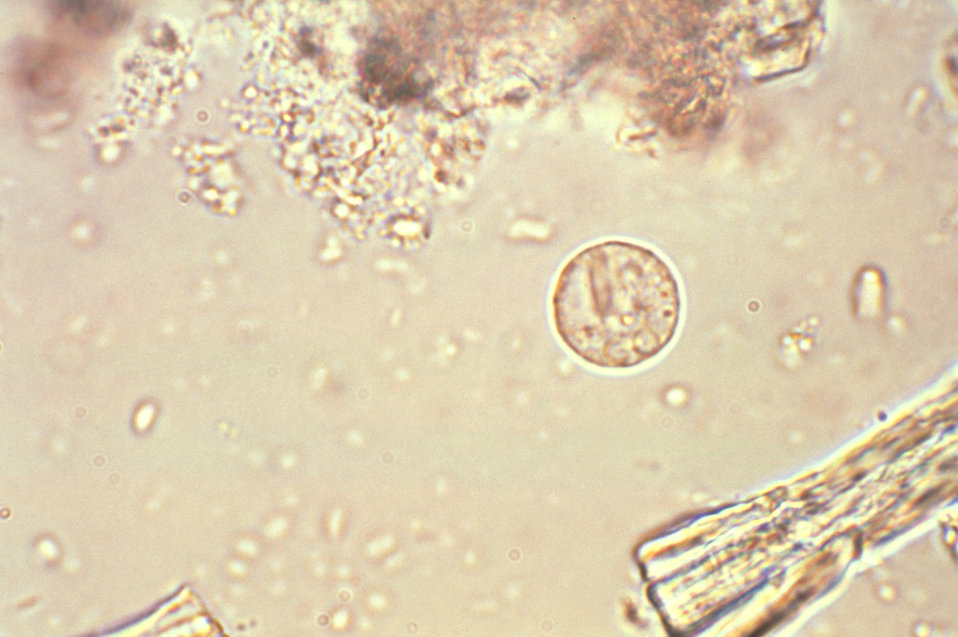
This unstained photomicrograph depicts a cyst of an Entamoeba histolytica amoebic parasite, displaying a visible chromatoid body.